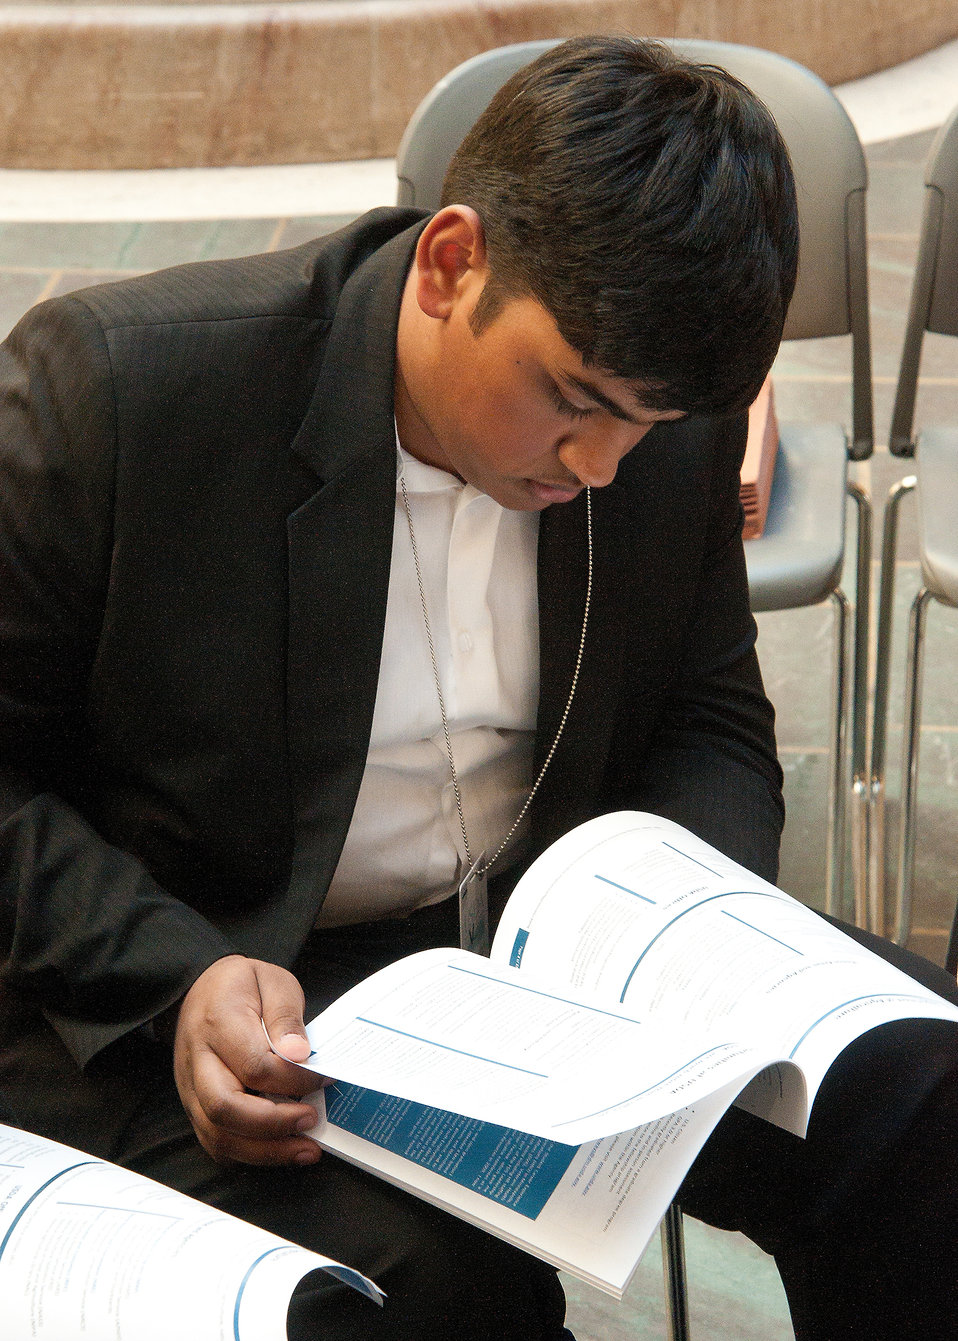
Edison Academy, Fairfax, VA student Mohammad Sagib reviews the student employment programs information during the annual U.S. Department of Agriculture’s (USDA) Information Technology (IT) Job Shadow Day held by the USDA Office of the Chief Information Officer (OCIO) to introduce local high school students to careers in information technology in Washington, D.C. on Tuesday, Apr. 2, 2013.